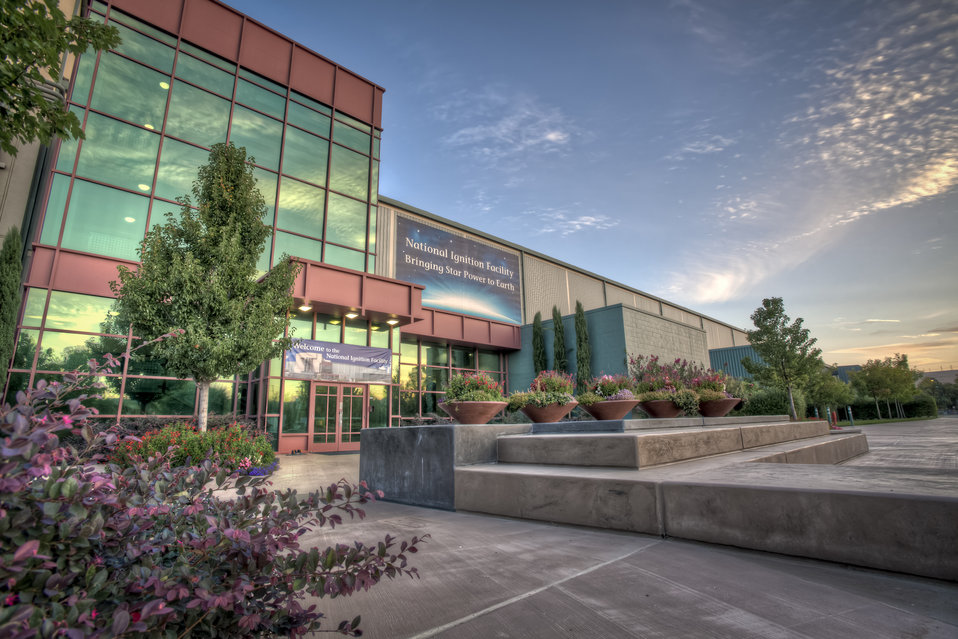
The National Ignition Facility at Lawrence Livermore National Laboratory is the world's largest and highest-energy laser system and the nation's largest scientific project.